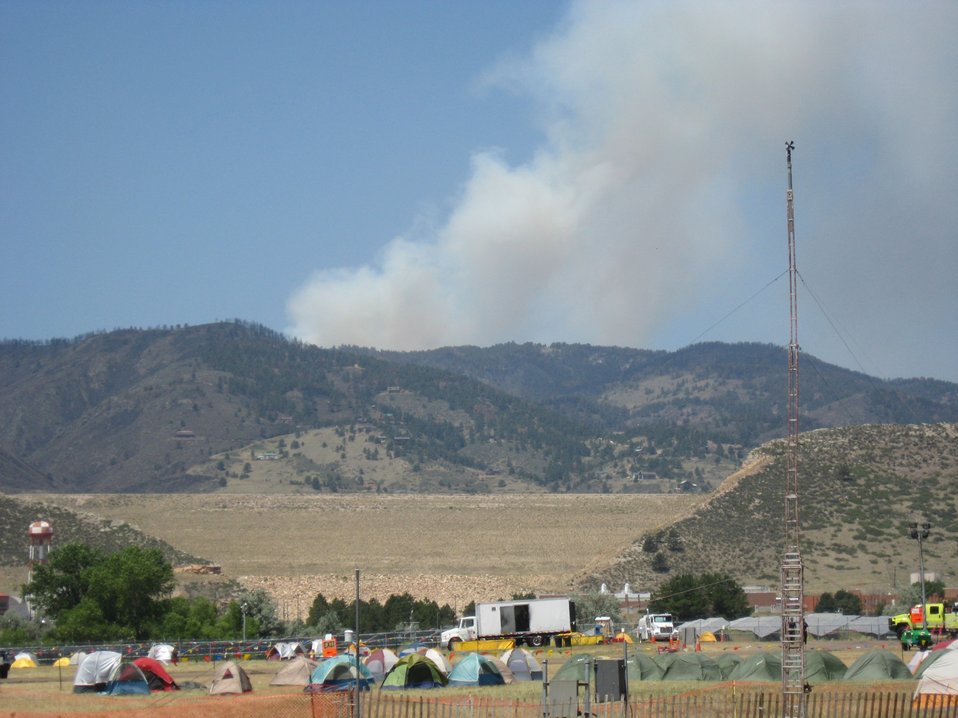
Smoke and flames rise in the air at the High Park Wildfire on the Arapaho and Roosevelt National Forests and Pawnee National Grassland on Tuesday, June 19, 2012. The High Park Wildfire located approximately 15 miles west of Fort Collins, CO has consumed over 65,738 acres of forest and grassland with approximately 189 homes destroyed. Over 1,773 personnel from the U.S. Forest Service (FS), state and local resources are fighting the wildfire and have achieved 55% containment as of June 20, 2012. The High Park Wildfire began on June 9. 2012 because of a lightening strike on private land.